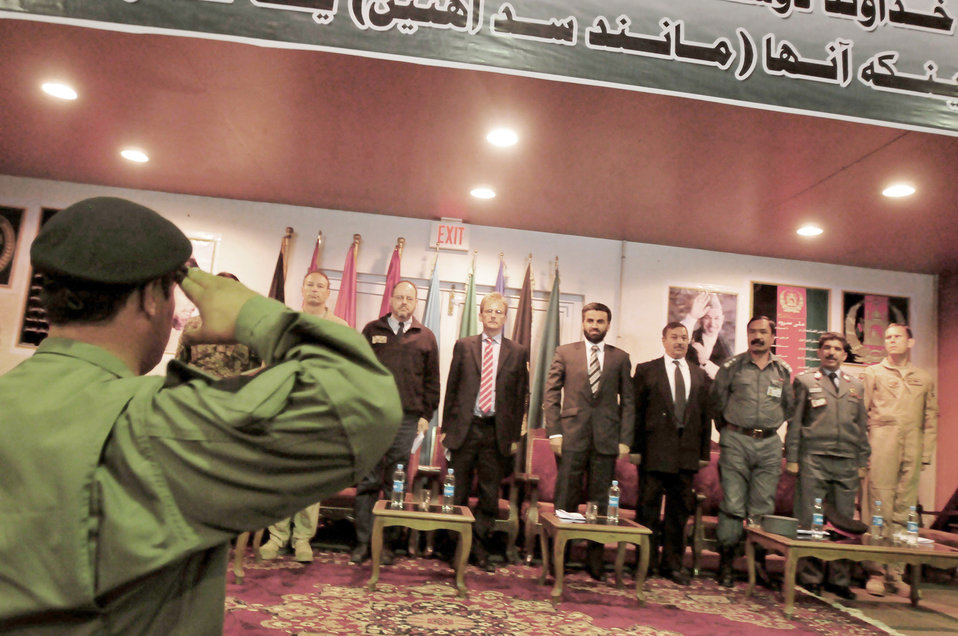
Operation Enduring Freedom

Afghan National Army Air Corps Col. Fahim Ramin salutes Tom Dodd (center) and Deputy Minister Daud (right-center) to conclude the transition ceremony May 5, 2010, at the conference center on a Afghan National Army Air Corps base in Kabul, Afghanistan. Colonel Ramin is the commanding officer of the Air Interdiction Unit. Mr. Dodd is the deputy ambassador to England. Mr. Daud is the deputy minister of counter narcotics for the ministry of interior.